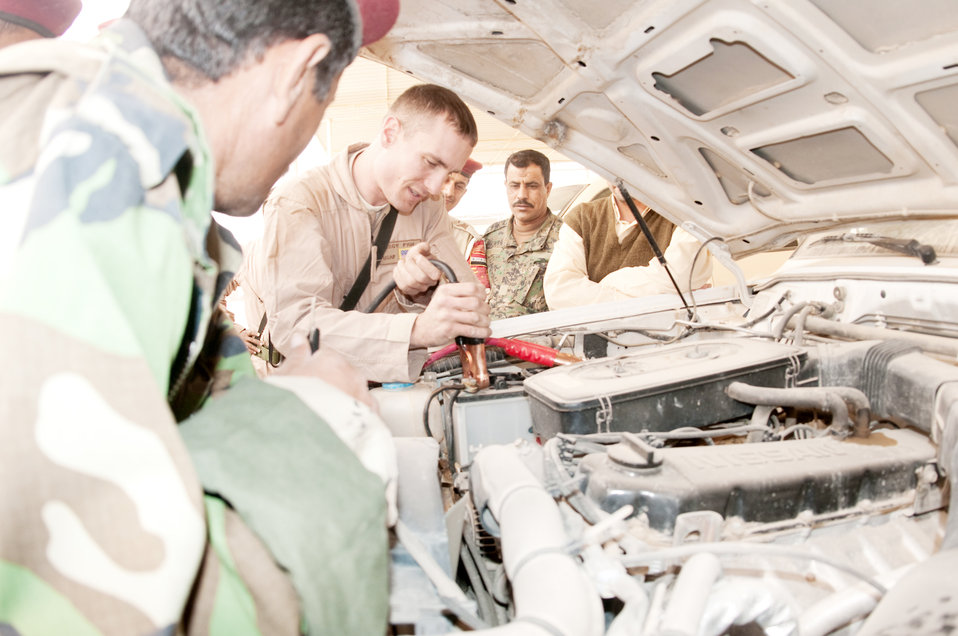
Coalition forces team up for vehicle training

Staff Sgt. Giles Fish demonstrates to Iraqi army members how to sequentially place the jumper cables onto a charged battery during a training course given by the Logistics Military Advisory Team Feb. 22, 2010, at Camp Ur, Iraq. Sergeant Fish is assigned to the 407th Expeditionary Logistics Readiness Squadron at Ali Base, Iraq. He is deployed from Little Rock Air Force Base, Ark.